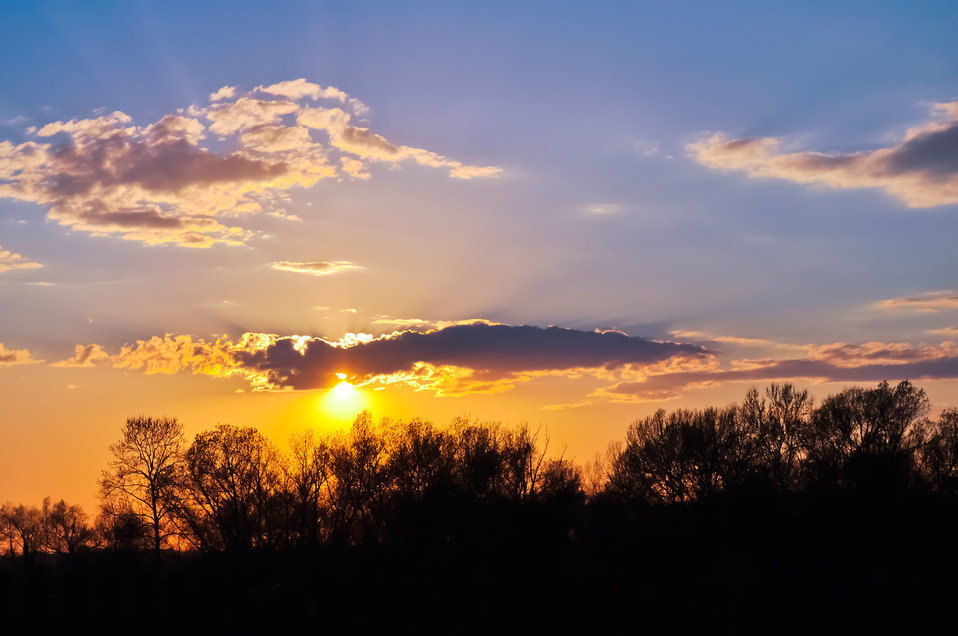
Sunset

Golden sunset.